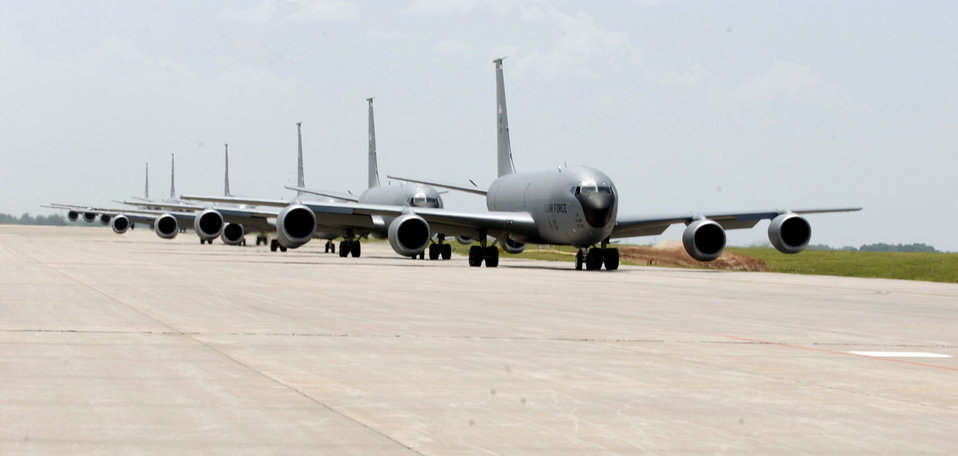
Elephant walk

Six KC-135 Stratotankers demonstrate the elephant walk formation as they taxi down a runway right behind each other during a generation exercise Aug. 5 at McConnell Air Force Base, Kan. The exercise showcased McConnell AFB aircrews' capability to prepare a flight and take off within minutes of being notified of a mission.